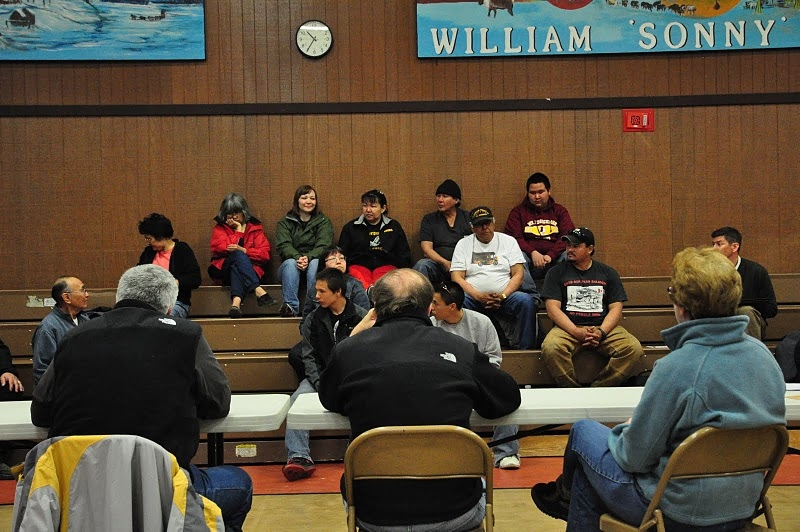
June, 2011 Engaging with Bristol Bay's tribal communities

(From left to right) Dennis McLerran, EPA Region 10 Regional Administrator; Bob Sussman, EPA Senior Counsel; and Nancy Stoner, Assistant Administrator for Water, visit the village of Ekwok and listen to members of the community on salmon and mining issues.

EPA officials have made many visits to engage with Alaska tribes since launching our watershed assessment - including 12 visits to eight different villages and additional meetings in Alaska, Seattle and Washington D.C.

Read more about how EPA is engaging Bristol bay's tribal communities

General information about EPA's work in Bristol Bay can be read at: www.epa.gov/bristolbay